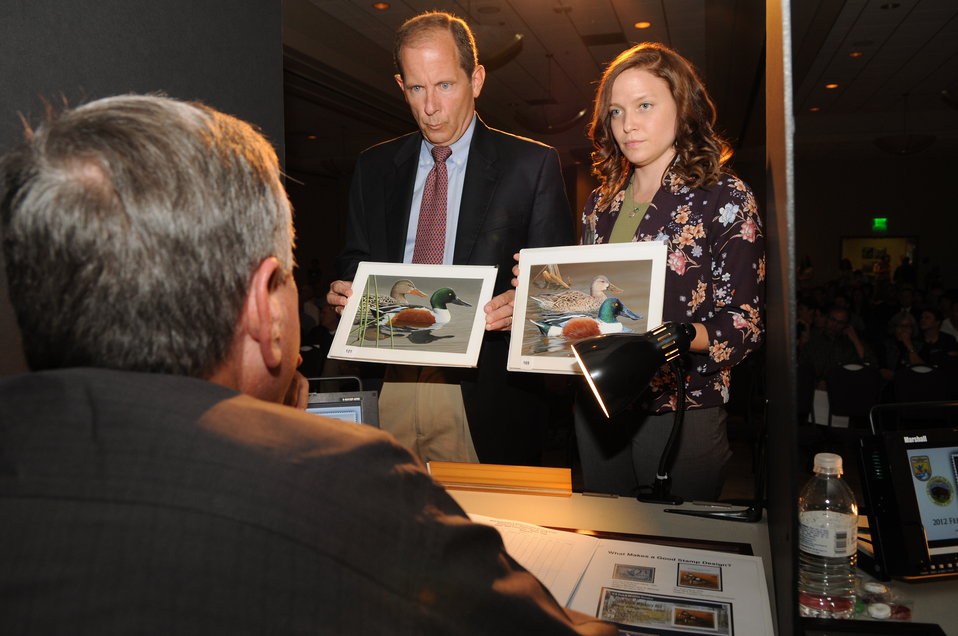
Judging

The U.S. Fish & Wildlife Service sponsored the 2012 Federal Duck Stamp Art Contest September 28 and 29 in Ogden, Utah, at Weber State University. A panel of five judges was responsible for choosing the art work used to design the 2013-2014 Migratory Bird Hunting and Conservation Stamp.